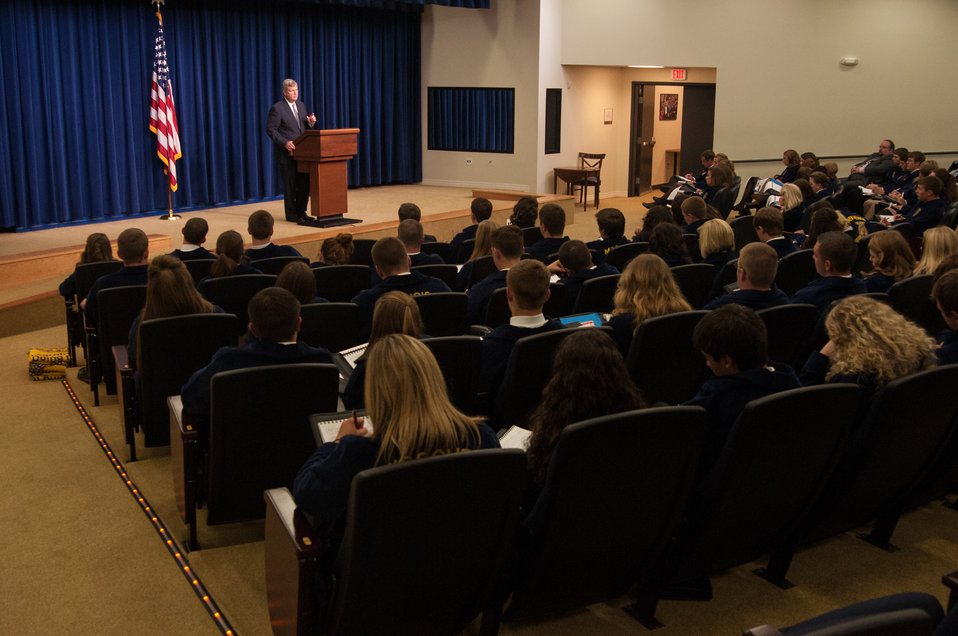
Agriculture Secretary Tom Vilsack speaks at a meeting of the White House Rural Council to an audience of the National State President’s Conference of the FFA on Wednesday, Jul. 24, 2013 in Washington, D.C. Secretary Vilsack took questions from the audience and discussed international, national and agricultural production topics with the FFA State President’s.